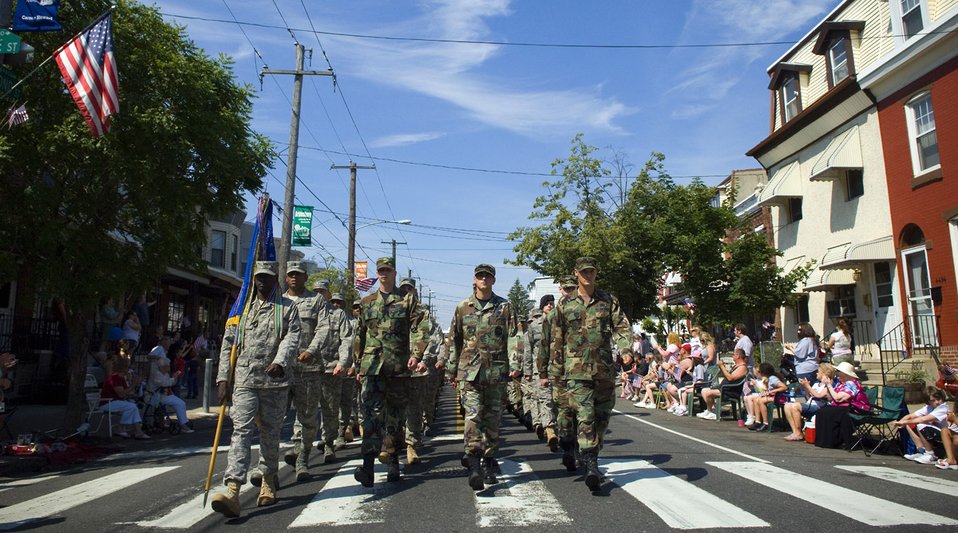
Philly Air Force Week

305th Air Mobility Wing Airmen from McGuire Air Force Base, N.J., march during the Bridesburg Memorial Day Parade May 26. Bridesburg is a borough in Philadelphia and hosted the kickoff celebrations for Air Force Week Philadelphia. The parade featured a fly-by of a KC-135 Stratotanker and a KC-10 Extender and a performance by the U.S. Air Force Heritage of America Band. Air Force Week Philadelphia is an event designed to build new relationships in the Philadelphia metropolitan area and strengthen public support for the Air Force mission and Airmen serving worldwide in the war on terrorism.